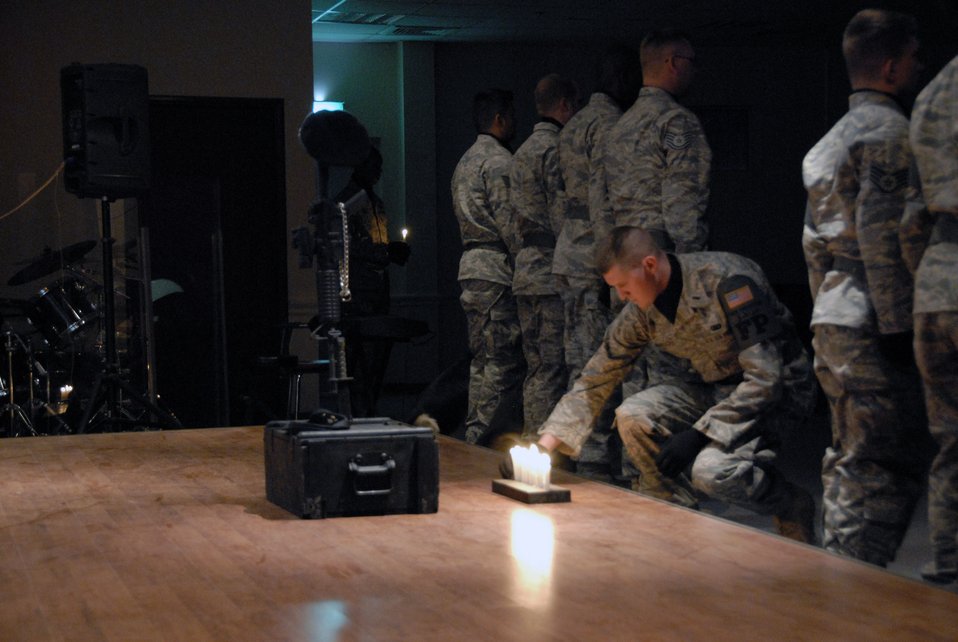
Airmen honor fallen comrades

1st Lt. Gregory DeGruchy places a candle in front of a memorial during a candlelight vigil May 13 at an air base in Southwest Asia. The candlelight vigil was a memorial service designated to pay homage to law enforcement officers who selflessly gave their lives in the line of duty during the past year including Air Force Office of Special Investigation special agents, security forces members and military working dogs. Lieutenant DeGruchy is the 386th Expeditionary Security Forces Squadron officer in charge of force protection.